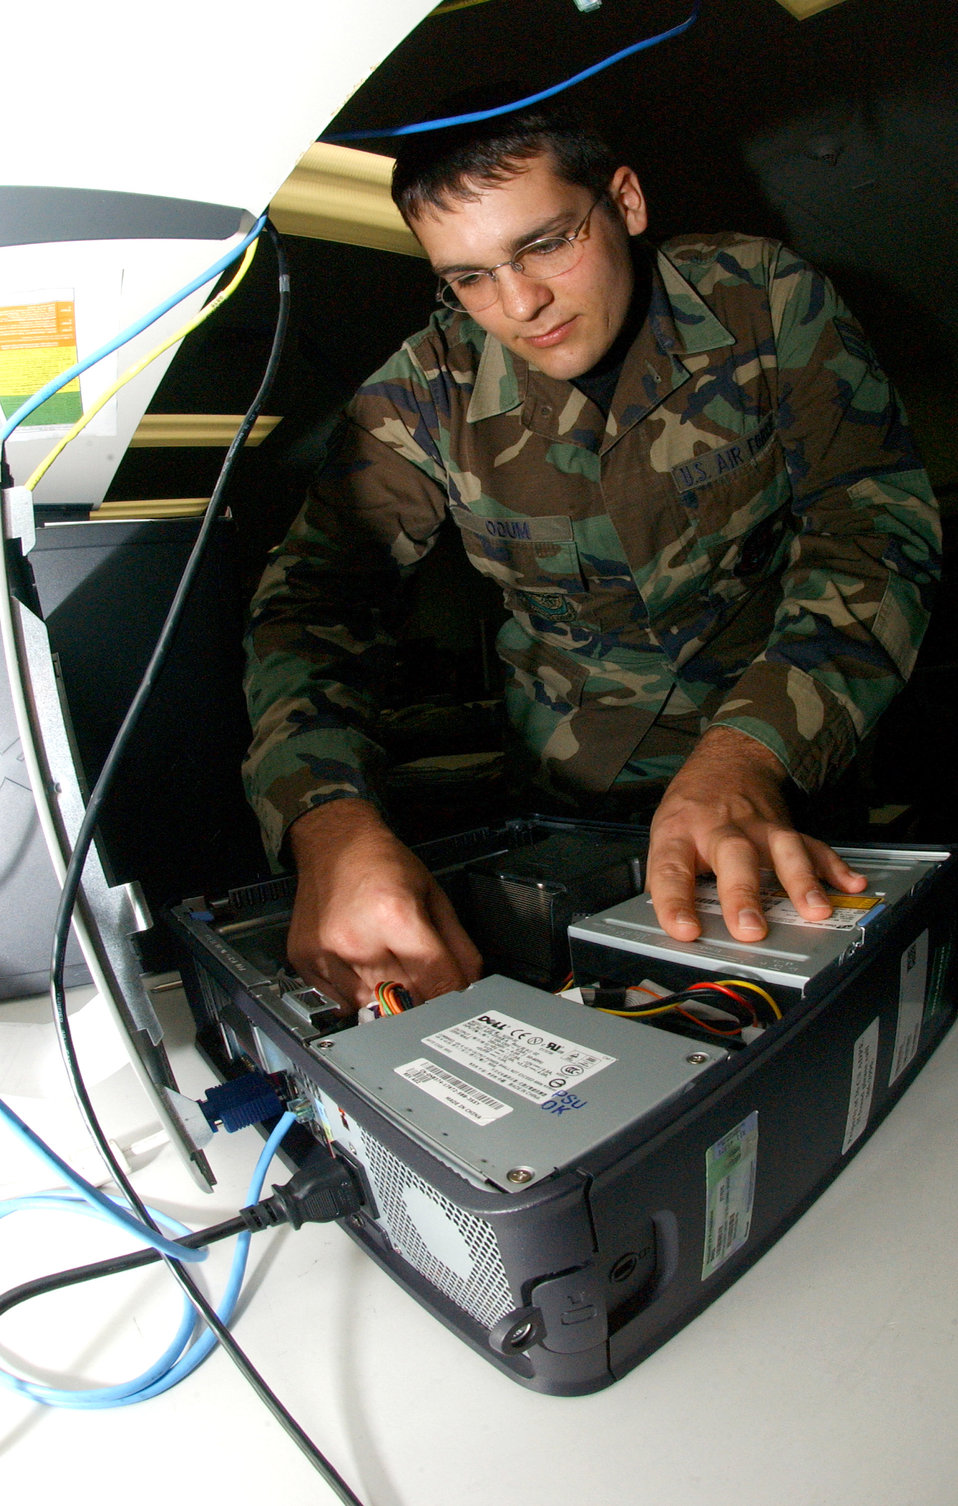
Cyber Airmen fight in America's newest battlefront

Senior Airman Jonathan Odum repairs a computer that will eventually go on the Andersen Air Force Base, Guam, computer network. He is deployed from the Ohio Air National Guard's 121st Air Refueling Wing and assigned to 36th Communications Squadron. Airman Odum is part of a special group of Airmen that are charged with the critical task of protecting Andersen's cyberspace against intruders.